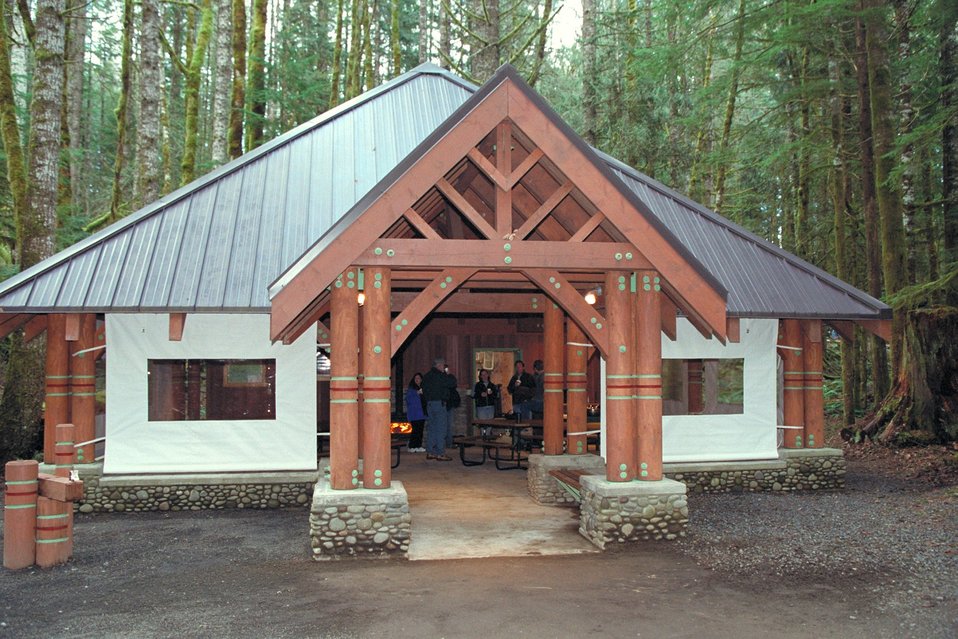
Cascade Stream Watch is an environmental education program conducted at BLM's Wildwood Recreation site.